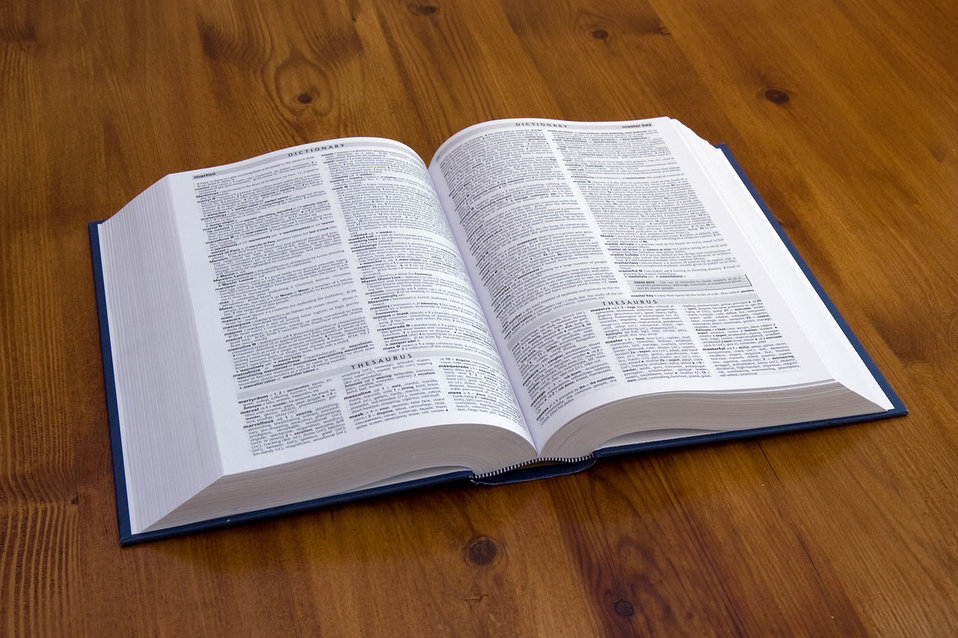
Book

An open book.